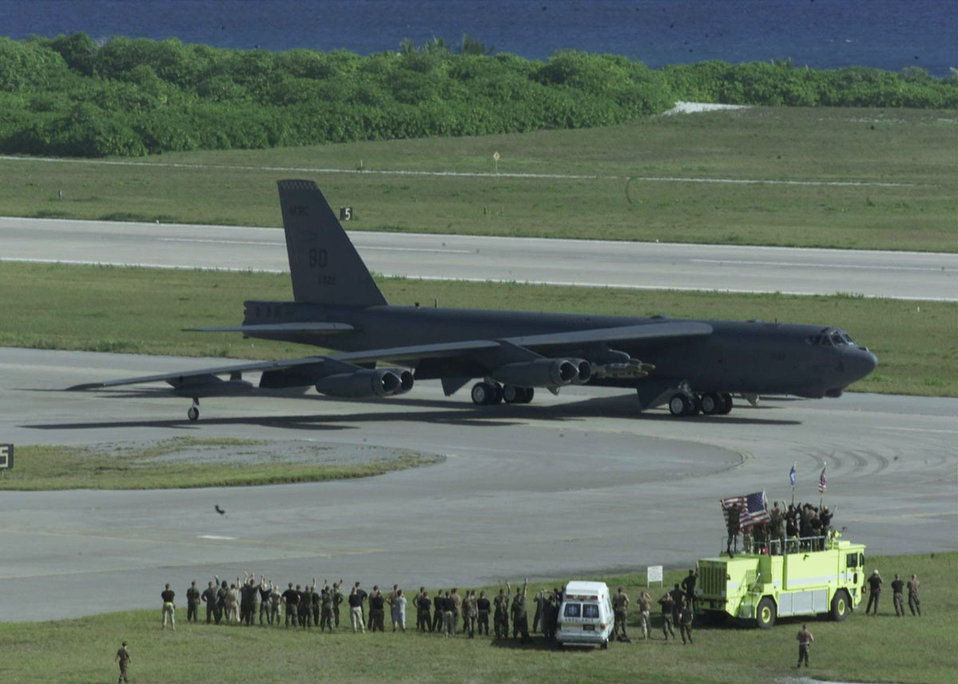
Here We Come

OPERATION ENDURING FREEDOM -- Ground crew members wave at a B-52H Stratofortress bomber as it taxis for take off on a strike mission against al Qaeda terrorist training camps and military installations of the Taliban regime in Afghanistan on Oct. 7, 2001, during Operation Enduring Freedom. The carefully targeted actions are designed to disrupt the use of Afghanistan as a base for terrorist operations and to attack the military capability of the Taliban regime.